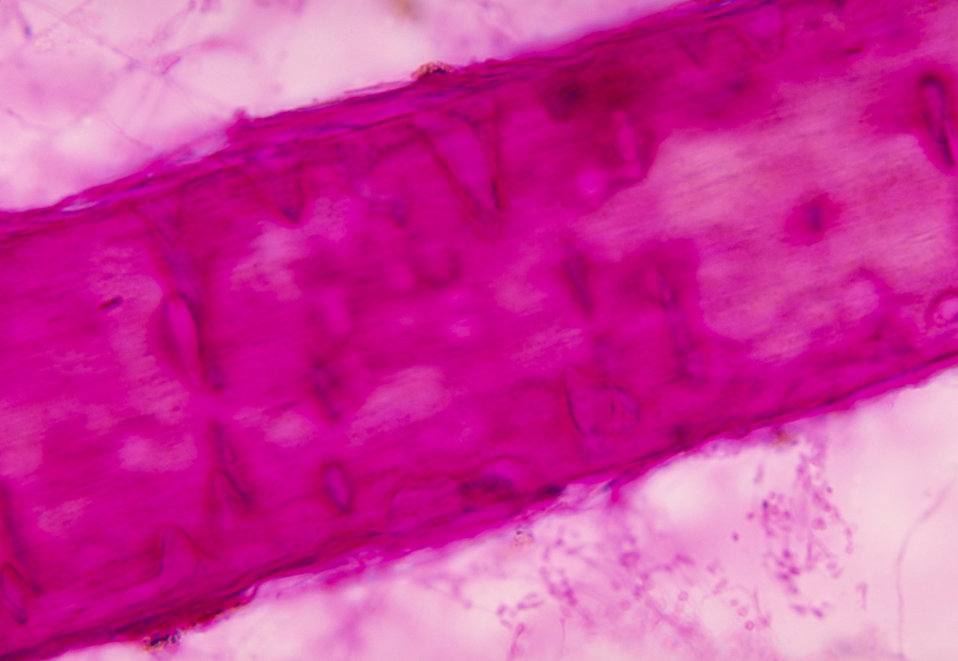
This is an in vitro hair culture of Trichophyton mentagrophytes using a PAS stain.